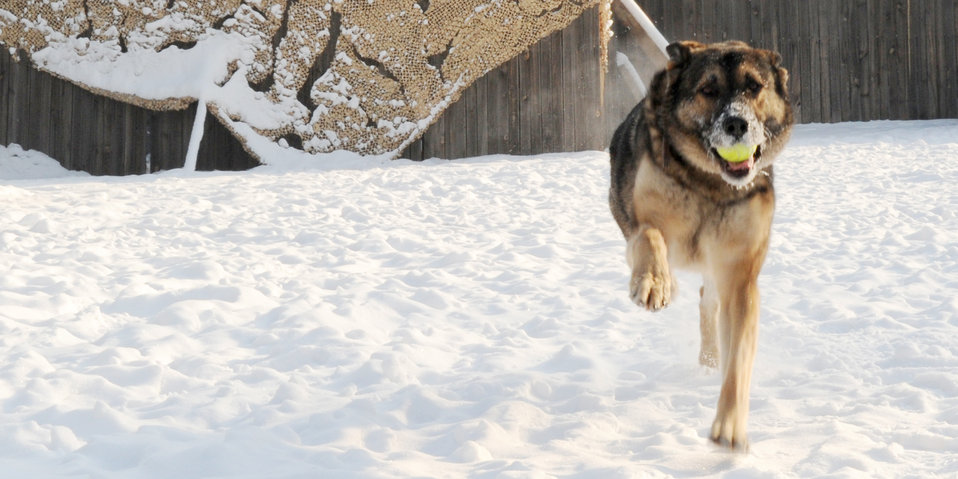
K-9 without a canine keeps working

Military working dog Arek plays fetch with his handler (not shown) as part of his morning exercise routine Feb. 10, 2010, at the Transit Center at Manas, Kyrgyzstan. This 7-year-old German shepherd has been in two explosions while on patrol in Iraq but is still certified in patrol and detection. He and his handler, Staff Sgt. Patrick Lau, are deployed to the 376th Expeditionary Security Forces Squadron from Hill Air Force Base, Utah.